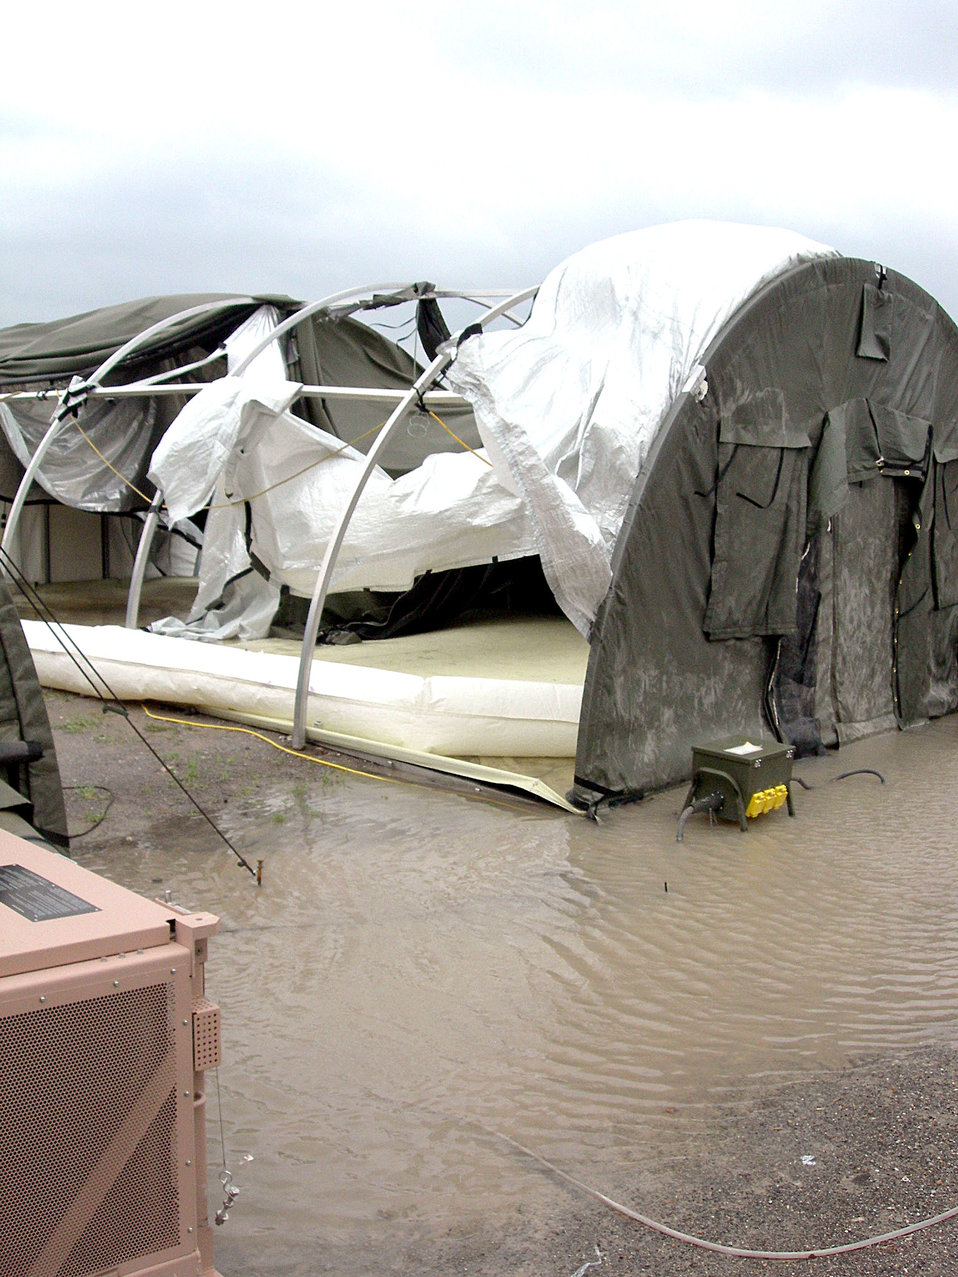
Hurricane Rita damage

NEW ORLEANS - An Alaskan Shelter sits in pieces after Hurricane Rita moved inland. This was one of several tents at the Louis Armstrong News Orleans Airport that flooded or damaged by the storm.